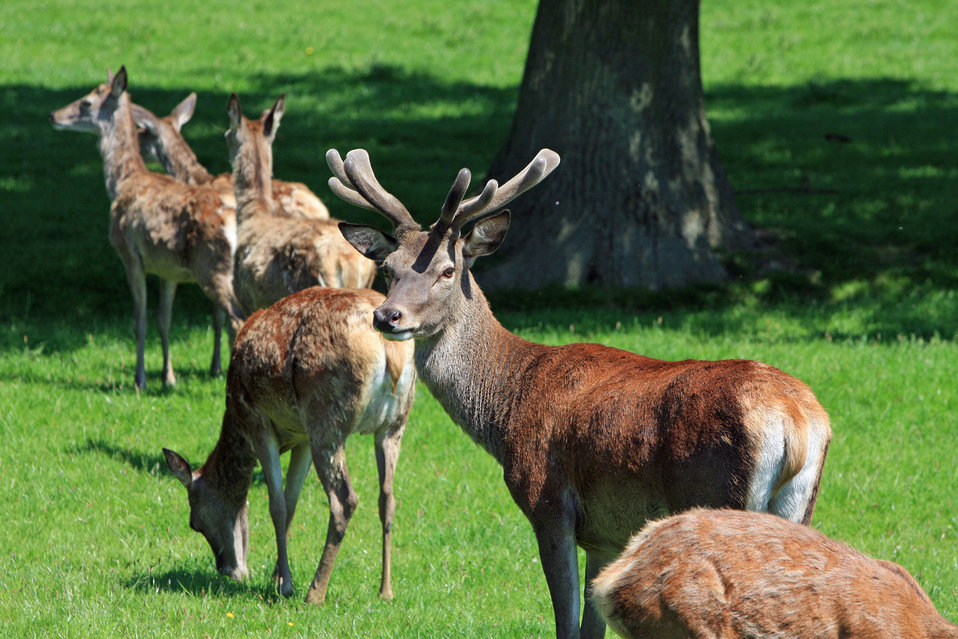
Red deer herd

Herd of red deer with stag.